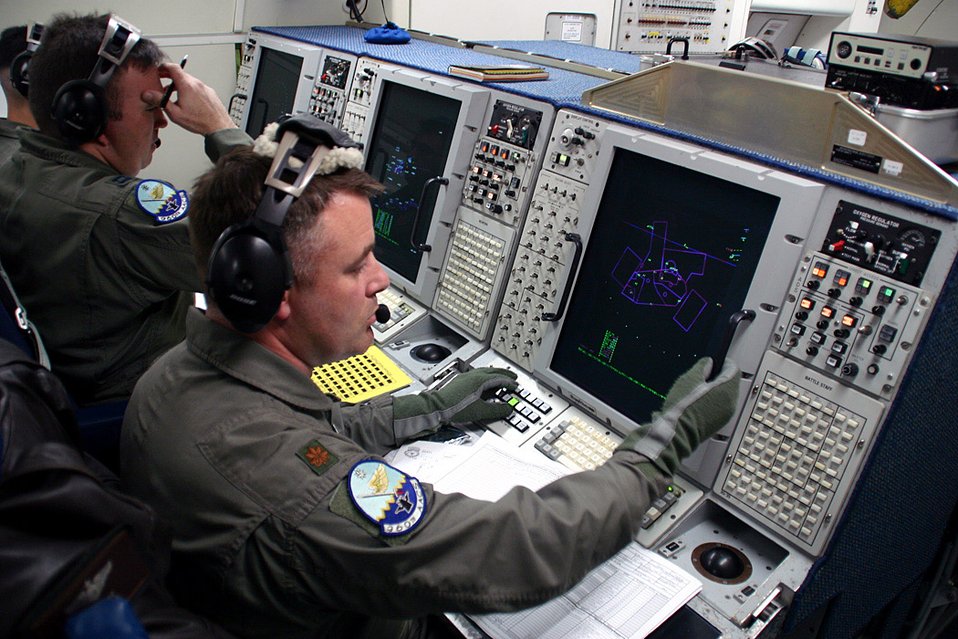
Scope work

Airmen from the 960th Airborne Air Control Squadron monitor the skies during the E-3 Sentry 30th anniversary flight March 23 over Tinker Air Force Base, Okla.. The E-3 first arrived at Tinker on Mar. 23, 1977, and Airmen have been conducting the same aerial surveillance mission for the past 30 years.